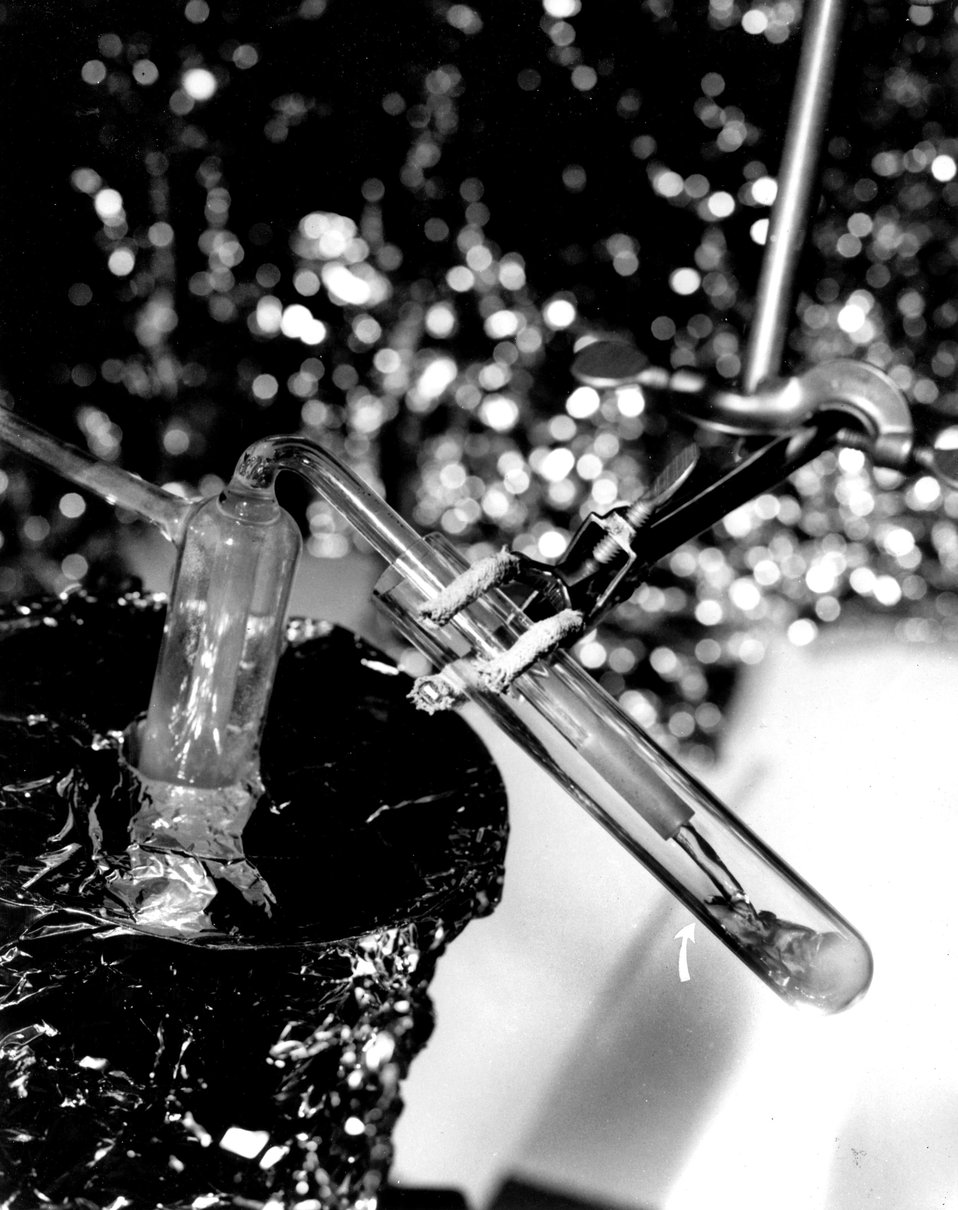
The first photograph of a typical fuel Molten Salt Reactor Experiment (MSRE). Fuel flowing at approximately 700 degrees C. (1,292 degrees F.). c. 1970